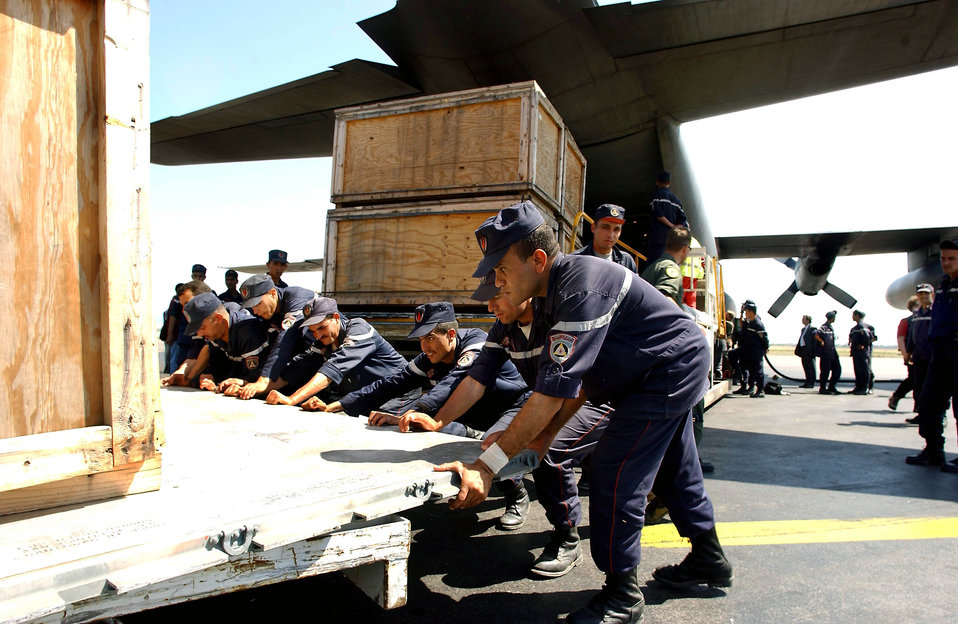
773rd Airlift help

ALGIERS, Algeria -- Algerian workers unload 15,000 pounds of medical supplies, beds and tents for earthquake victims here. Reservists from the 773rd Airlift Squadron at Youngston, Ohio, and deployed to the 86th Airlift Wing at Ramstein Air Base, Germany, delivered the goods May 30.